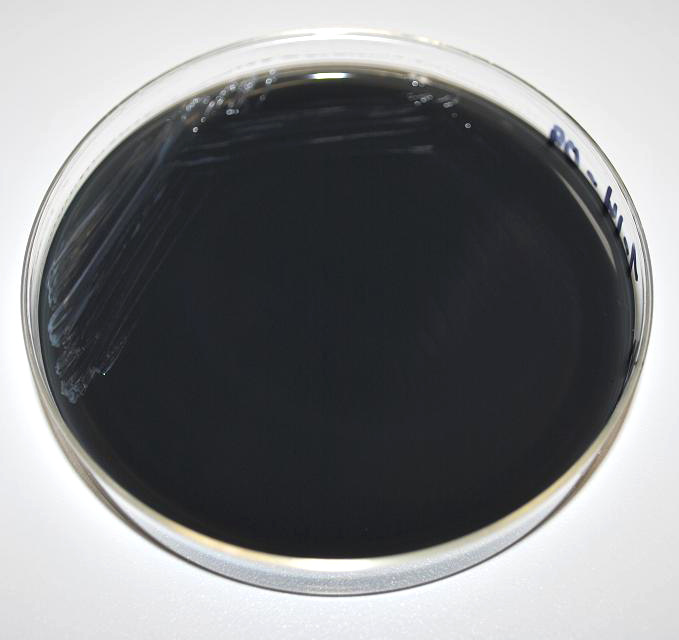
This image depicts a Petri dish containing a buffered charcoal yeast extract (BCYE) agar medium, which had been inoculated with Gram-negative Francisella tularensis live vaccine strain (LVS) bacteria. F. tularensis is the pathogen responsible for causing the disease tularemia. This was the appearance of the colonial growth after 24 hours of incubation. What is tularemia?